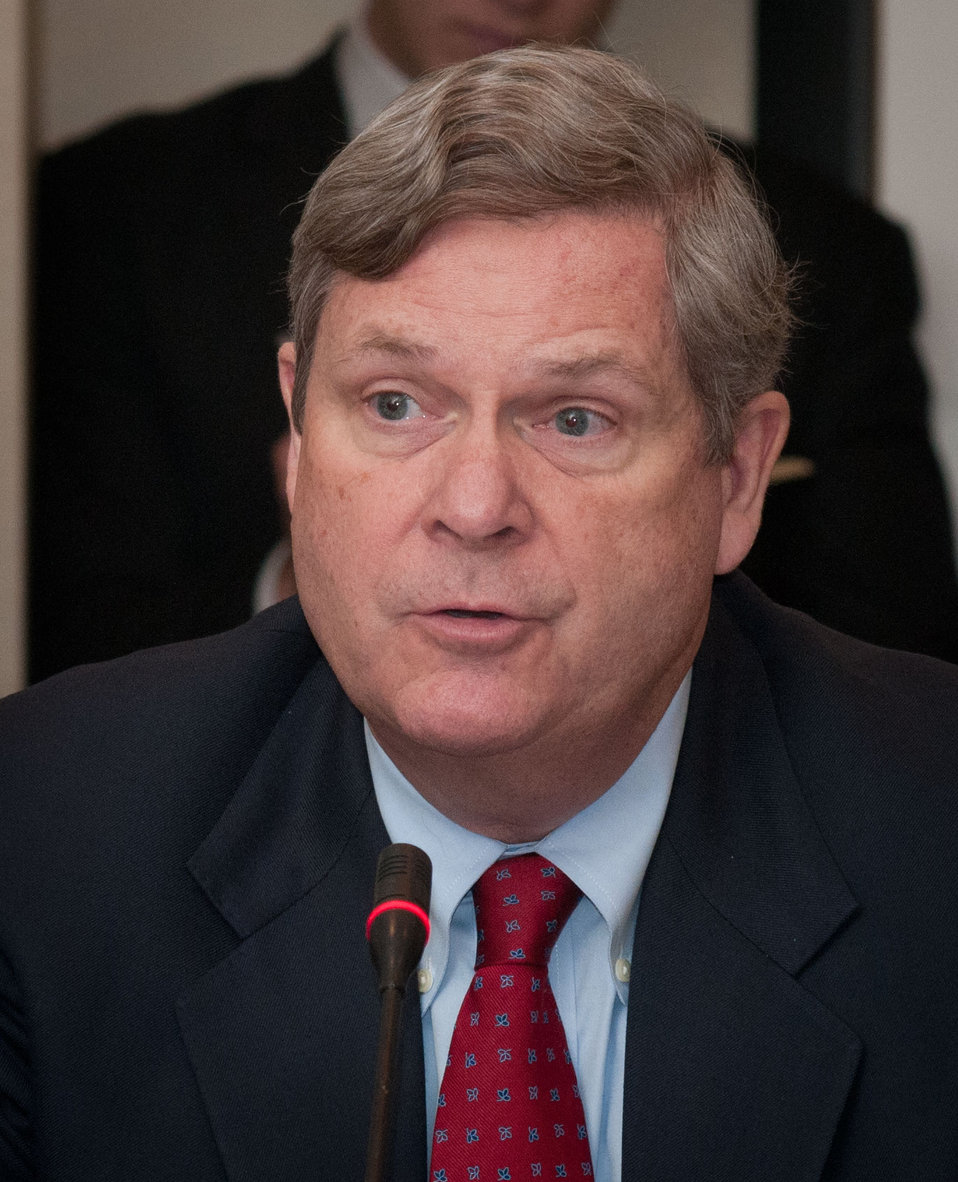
Agriculture Secretary Thomas Vilsack spoke about the food farm jobs bill, Supplemental Nutrition Assistance Program (SNAP) and many other ways that rural America makes a difference, with mayors at the United States Conference of Mayors 81st Winter Meeting, Food Policy session in Washington D.C., on Thursday, Jan 17, 2013.